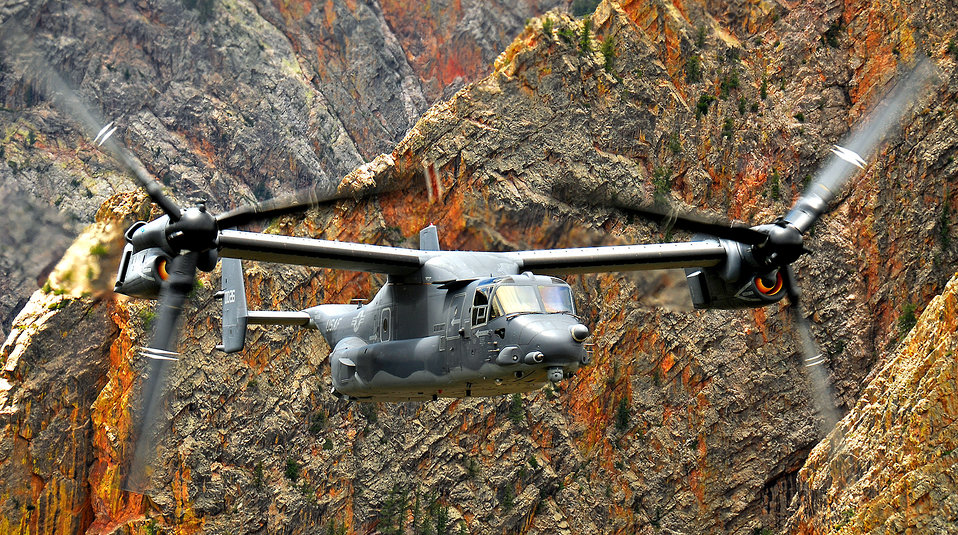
CV-22 Osprey flies first search and recovery mission

A CV-22 Osprey flies over the New Mexico and Colorado wilderness in August. The CV-22 participated in its first search and rescue mission Oct. 5 when a small civilian aircraft crashed.